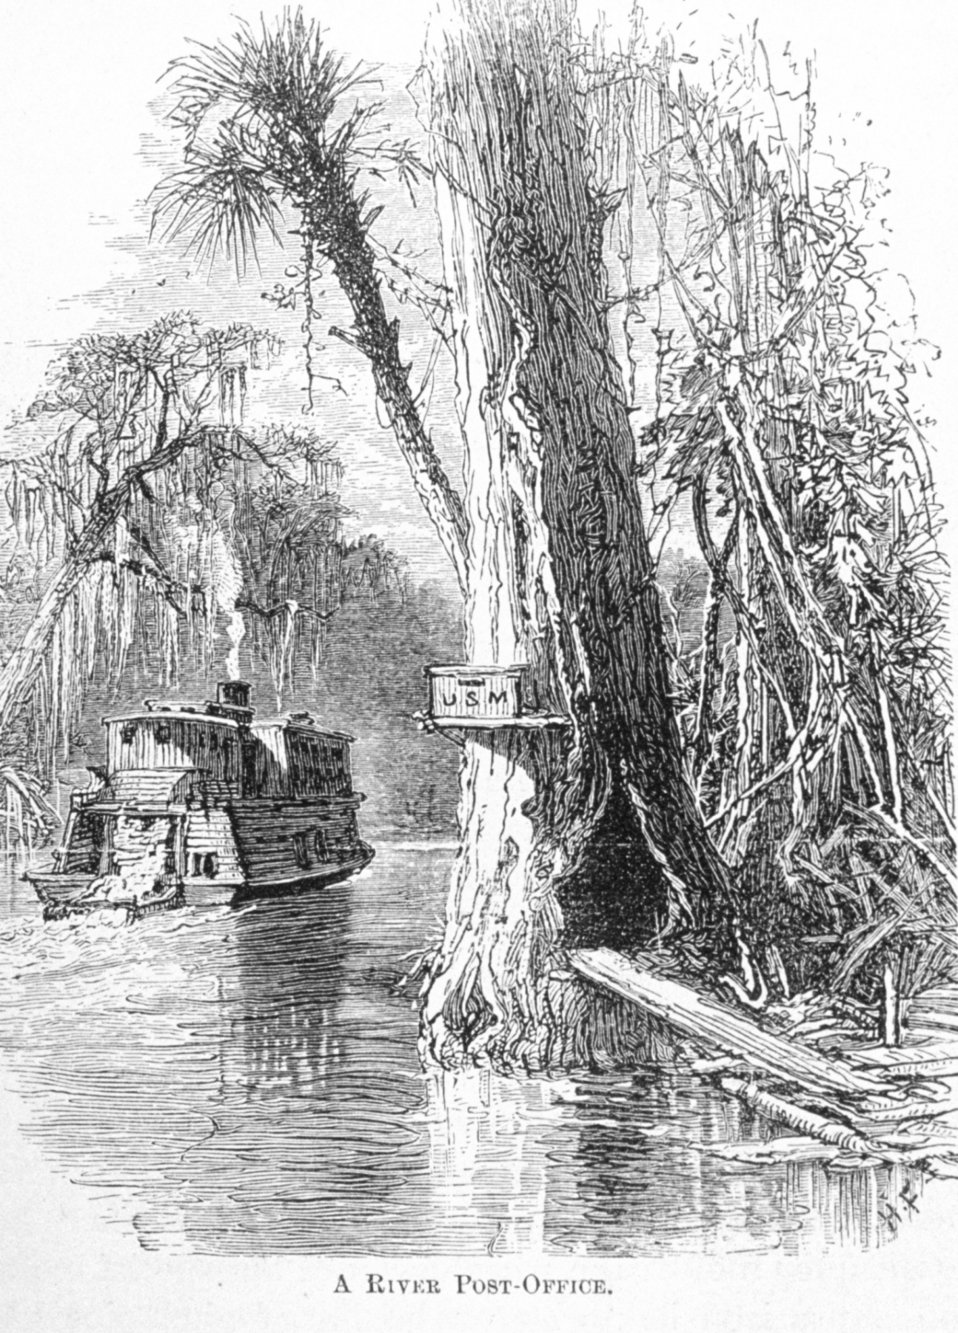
A River Post-Office - in 'Florida for Tourists, Invalids, and Settlers' by George M. Barbour, 1881. Library Call No. F316 .B23 1881. A scene along the Ocklawaha River in central Florida near Ocala.